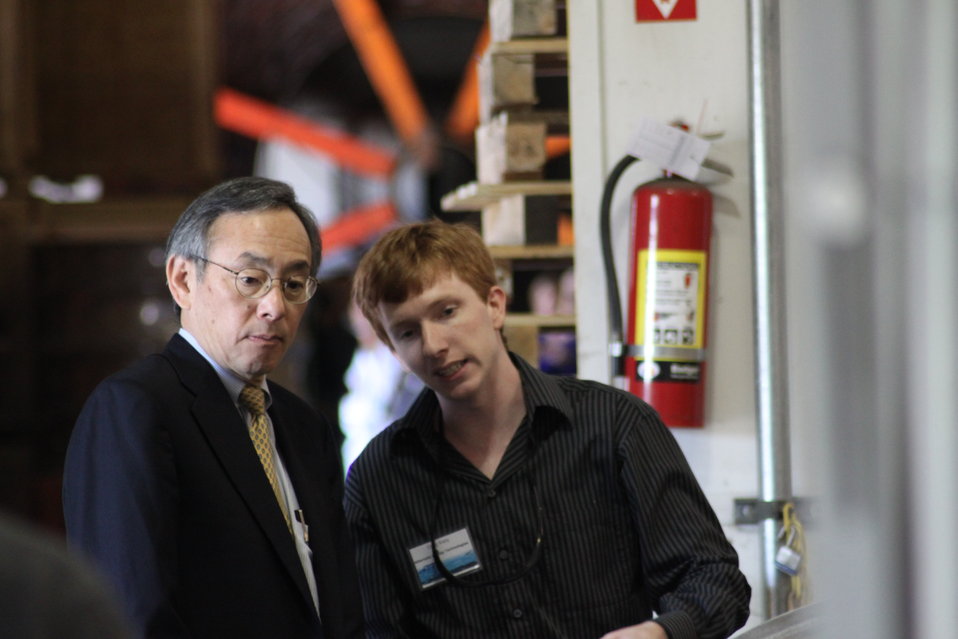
Norm 007